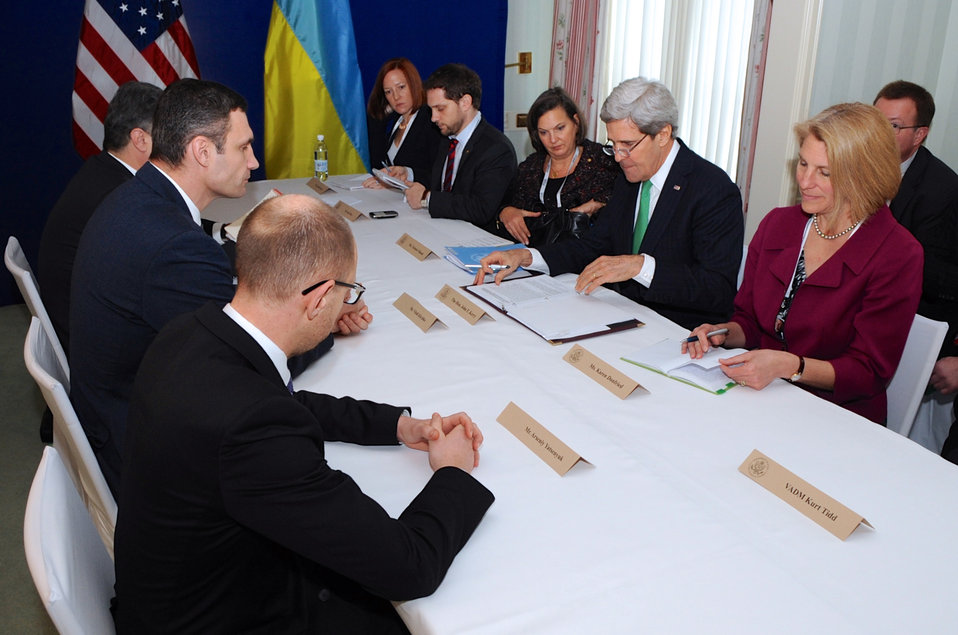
Secretary Kerry Meets With Ukrainian Opposition Leaders in Munich

U.S. Secretary of State John Kerry and his team sit across from Petro Poroshenko of the Euromaidan Movement, Vitali Klychko of the UDAR Party, and Arseniy Yatsenyuk of the Fatherland Party at the outset of a meeting with the Ukrainian opposition leaders on the sidelines of the Munich Security Conference in Munich, Germany, on February 1, 2014.